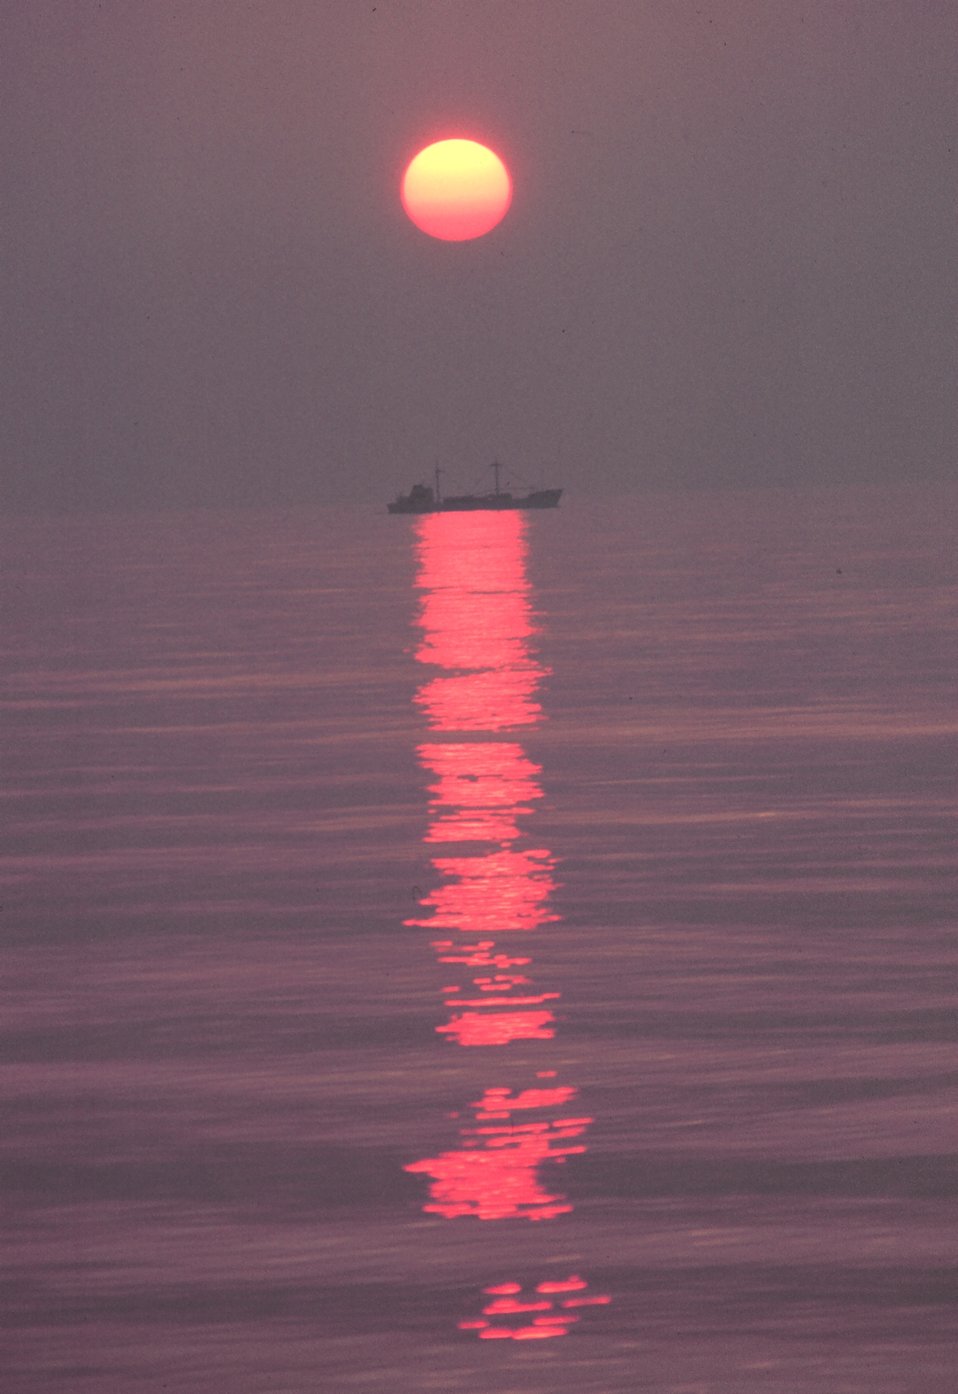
A cargo vessel caught in the rays of the setting sun.